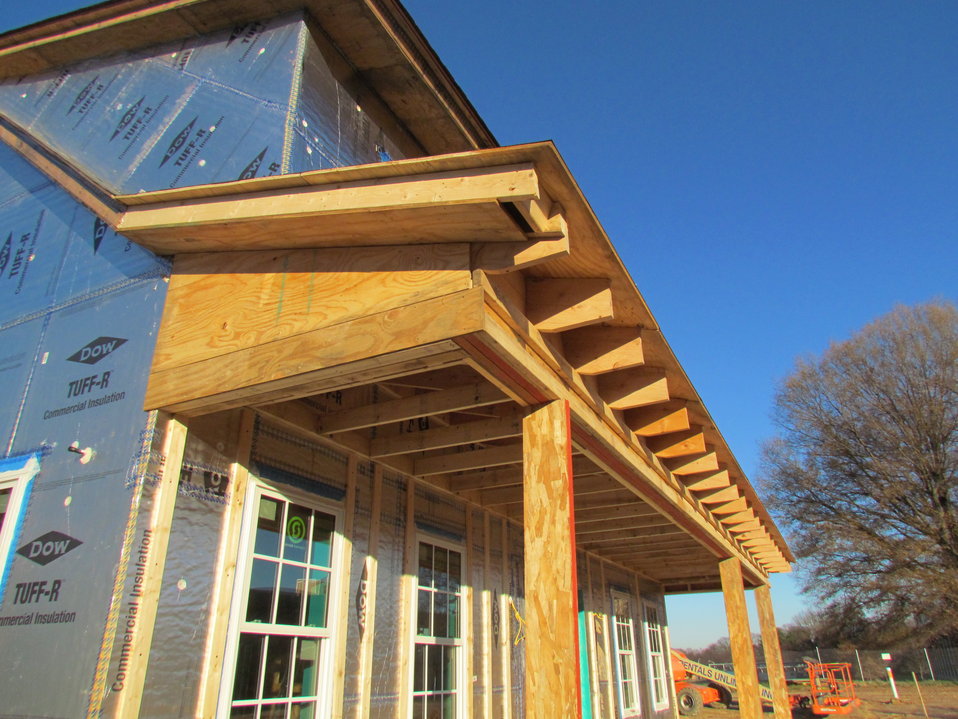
Net-Zero Energy Residential Test Facility – Construction photo showing completed framing associated with front porch.